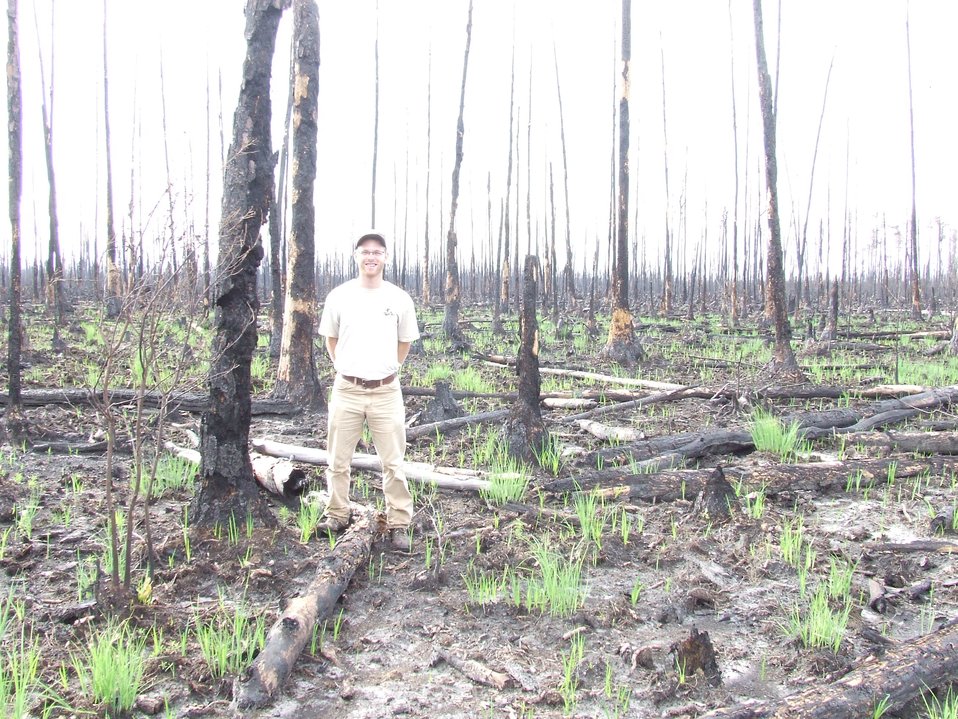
Ben Weiss

FWS Wilderness Fellow Ben Weiss pauses from surveying characteristics of the Okefenokee wilderness.